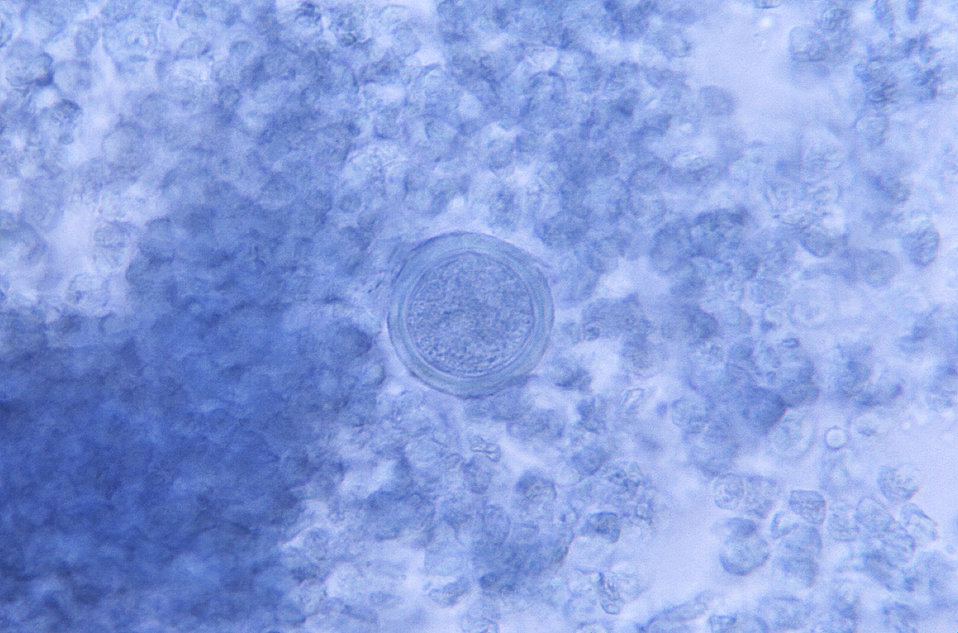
This photomicrograph revealed the presence of a round, thick-walled, spherule-staged Coccidioides immitis fungal organism.